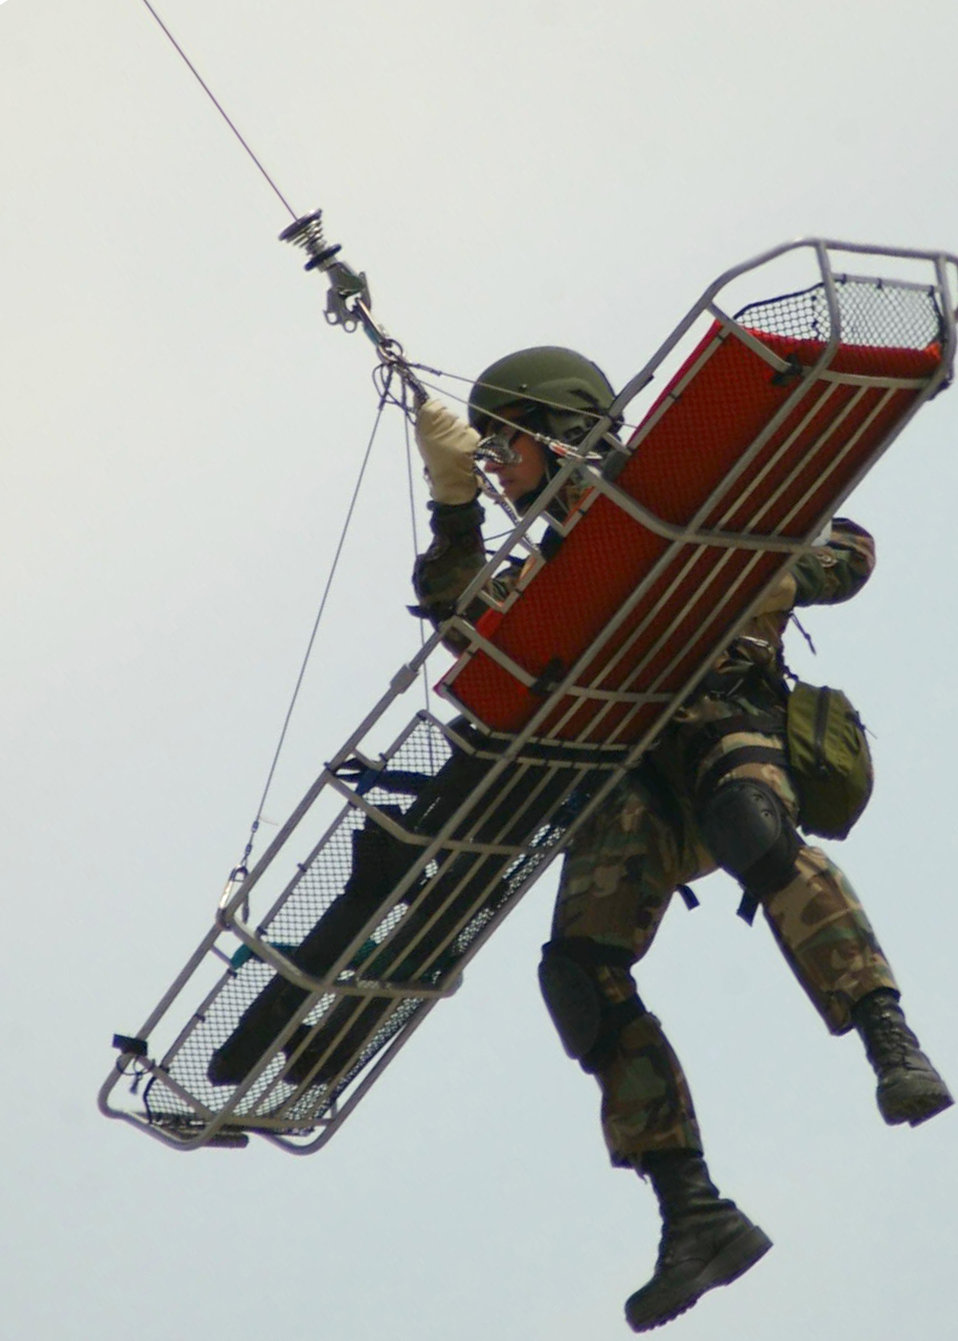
Up, up and away

OVER DAVIS-MONTHAN AIR FORCE BASE, Ariz. -- A pararescuer from the 48th Rescue Squadron is extracted into a HH-60 Pave Hawk to simulate a rescue as part of their Alternate Insertion Extraction training here Aug. 16.